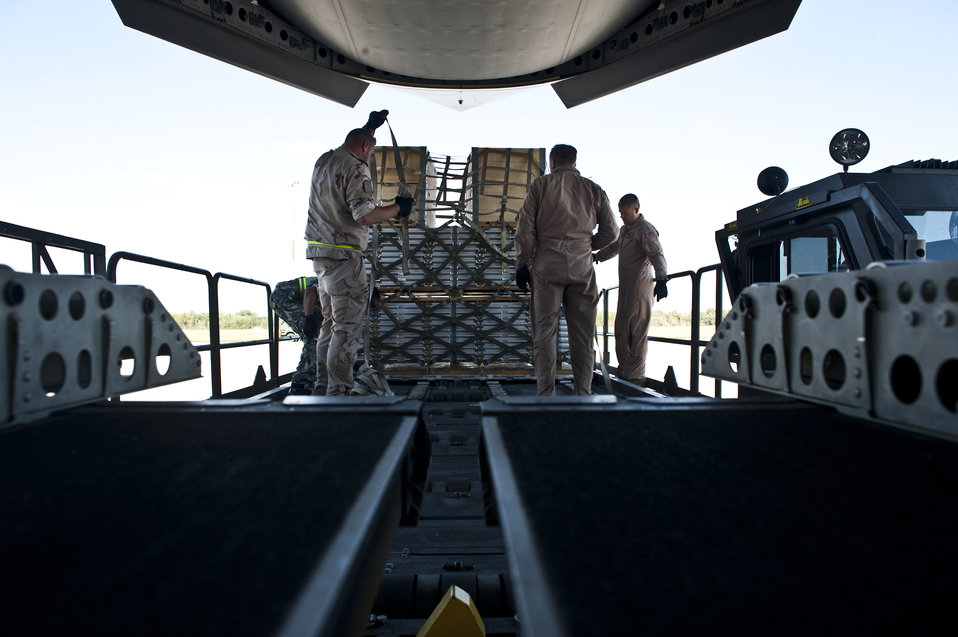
Papa AB, Hungary

Aerial porters of the Heavy Airlift Wing at Papa Air Base, Hungary remove pallets from a C-17 Globemaster III after a recent Swedish mission. The wing operates a fleet of three Globemaster III long-range cargo jets under the Strategic Airlift Capability program that consists of ten NATO nations Bulgaria, Estonia, Hungary, Lithuania, the Netherlands, Norway, Poland, Romania, Slovenia and USA and two Partnership for Peace nations, Sweden and Finland.